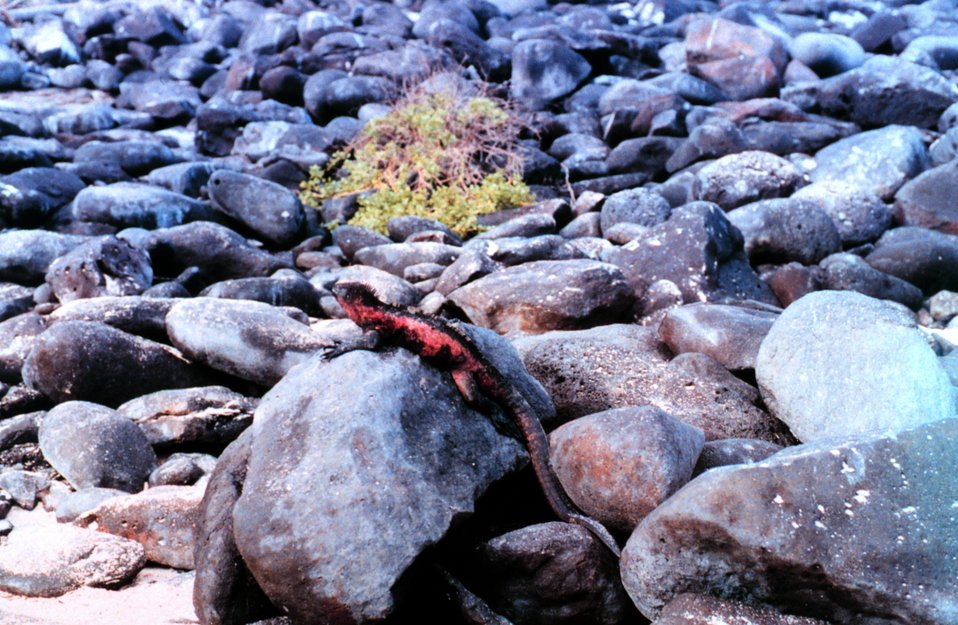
Red and black iguana on a rock